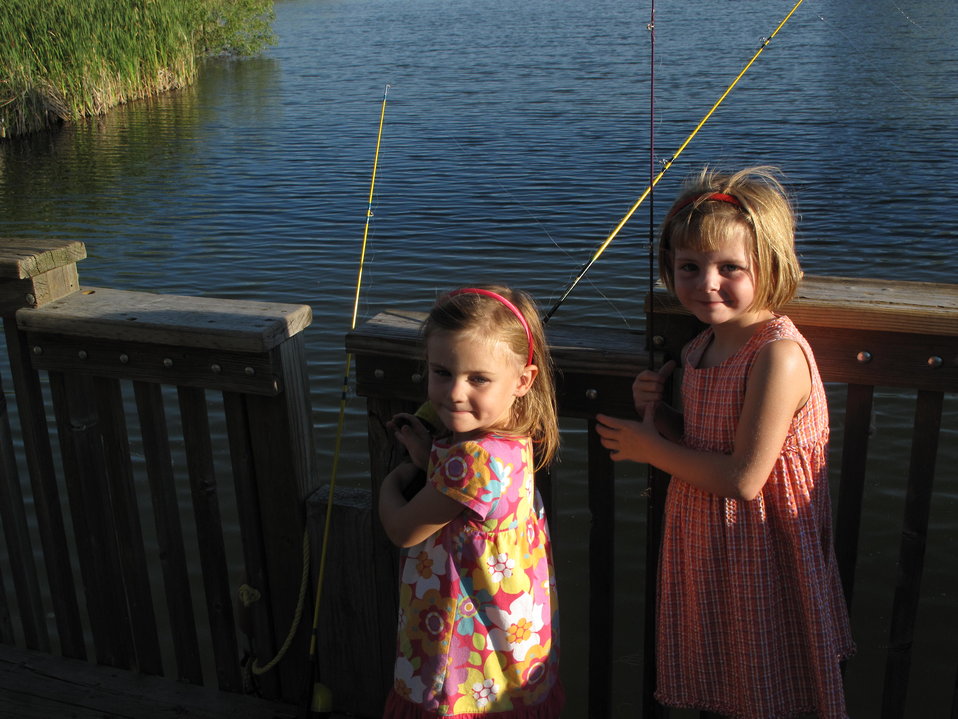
Girls Fishing

Environmental Learning for Kids (ELK) fishing trip to the Rocky Mountain Arsenal in Colorado.